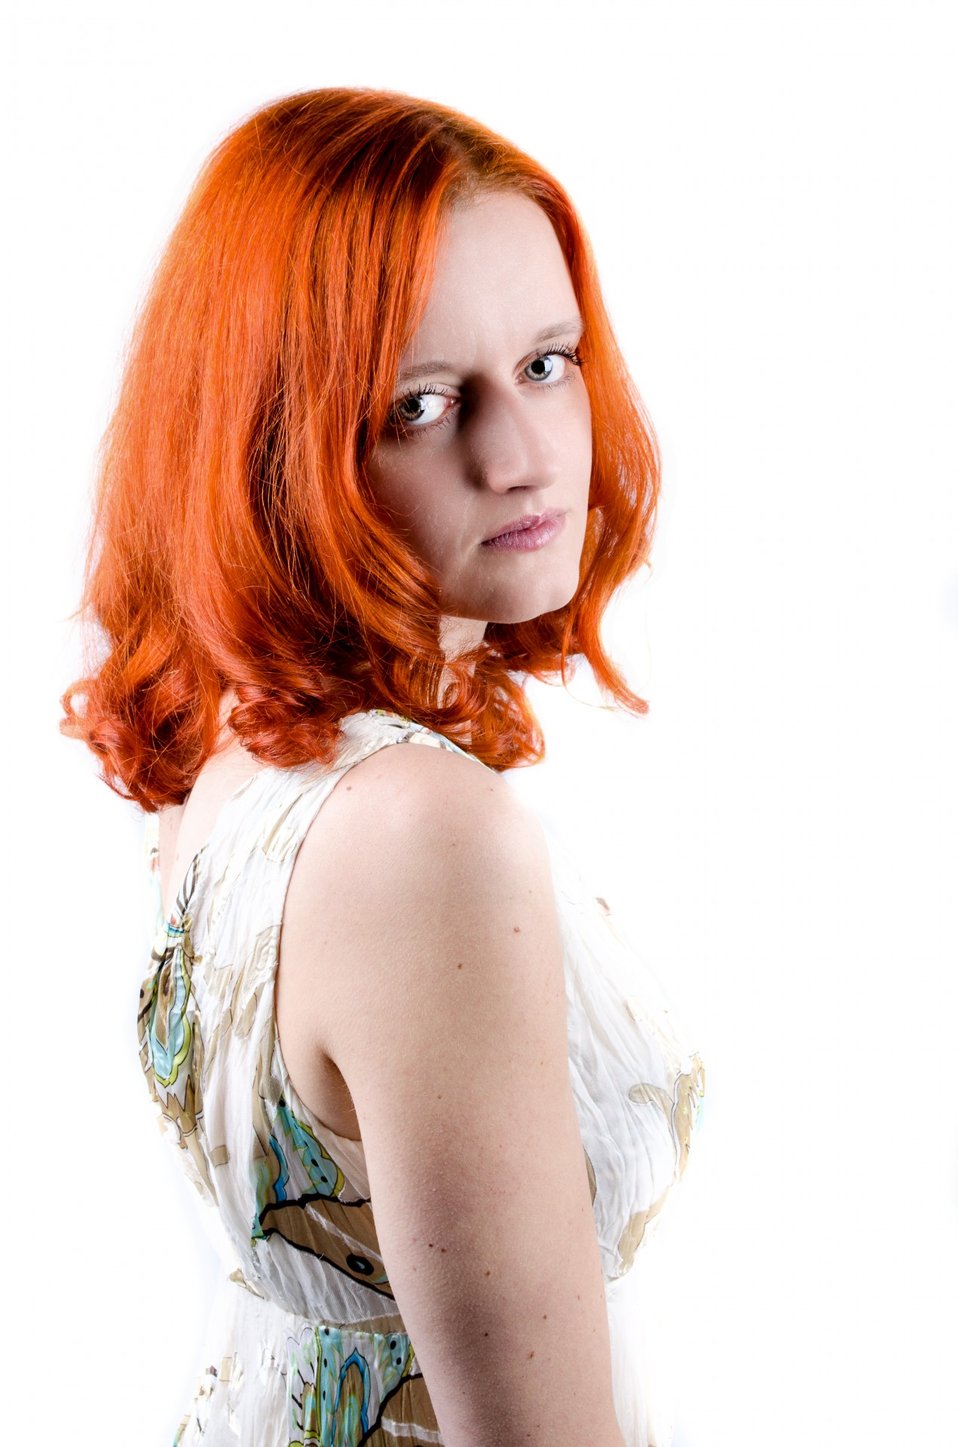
Woman with red hair.